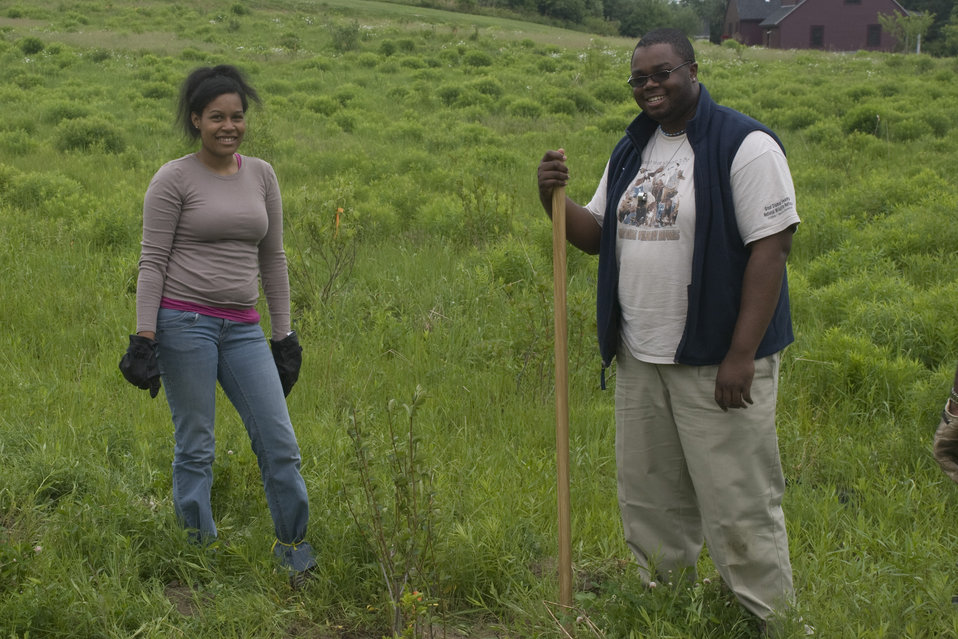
Rachel Carson Natl Wildlife Refuge, ME